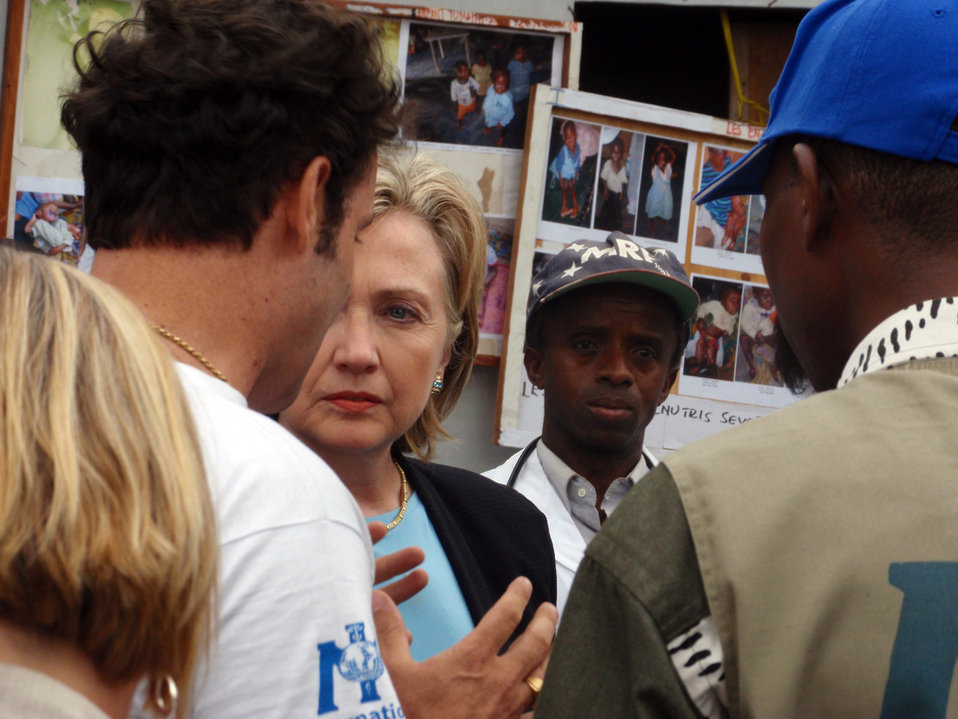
Behind the Scenes: Secretary Clinton Visits Mugunga IDP Camp

U.S. Secretary of State Hillary Rodham Clinton is briefed by staff at the Mugunga Internally Displaced Person (IDP) Camp in Goma, Democratic Republic of Congo August 11, 2009.